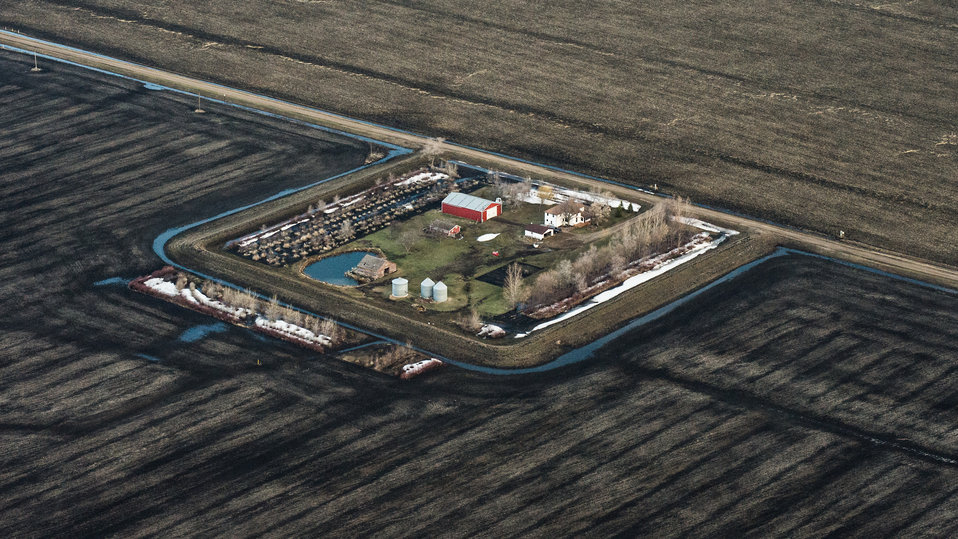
William Lisberg used the U.S. Department of Agriculture (USDA) Environmental Quality Incentives Program (EQIP) to receive an incentive payment to help in the cost of the earthen ring dike construction around his farmstead, in Cass County, ND, on Tuesday, April 30, 2013. A week ago, the farmstead was covered in snow. Now thawed, the water fills the drainages. For information about this and other programs from the USDA the Natural Resources Conservation Service (NRCS) Red River Basin Initiative (RRBI) please see www.mn.nrcs.usda.gov/news/features13/RRBI.html.